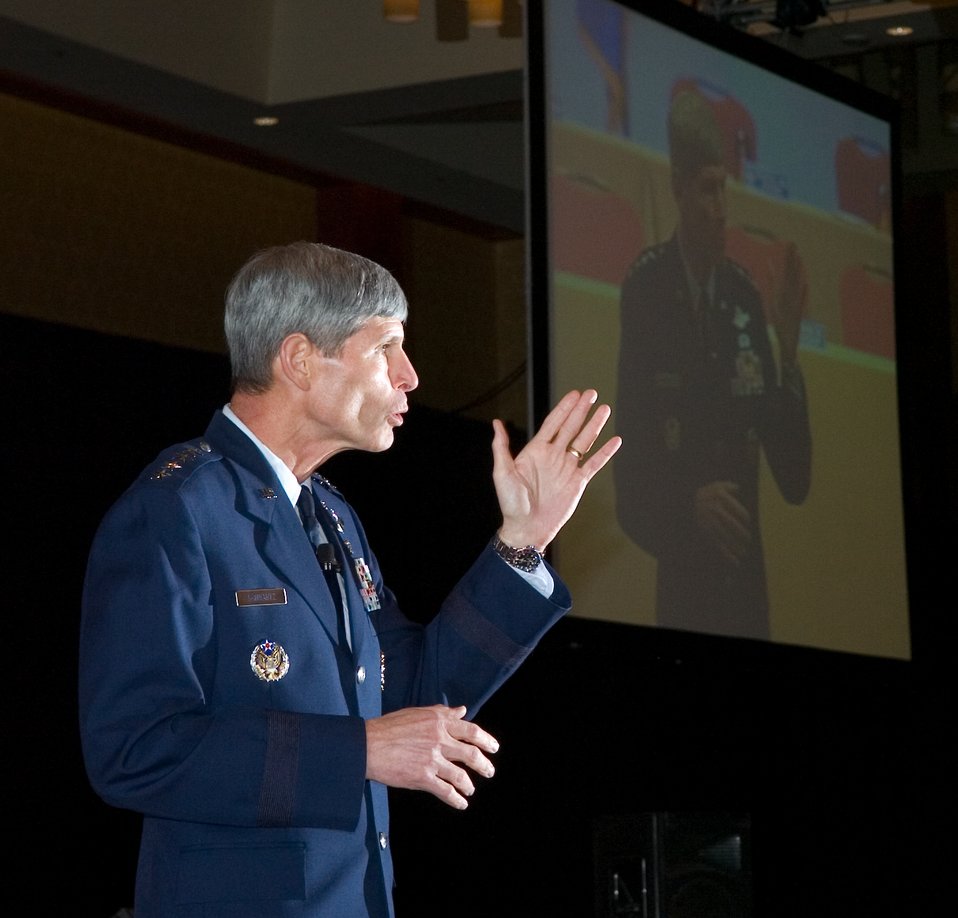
Air Force chief of staff discusses leadership goals

Gen. Norton Schwartz, Air Force chief of staff, delivers his keynote speech Aug. 25 at the Air Force Sergeants Association's annual Professional Airmen's Conference and International Convention in San Antonio. General Schwartz discussed his goals for the direction of the Air Force and addressed the importance of noncommissioned officer leadership.